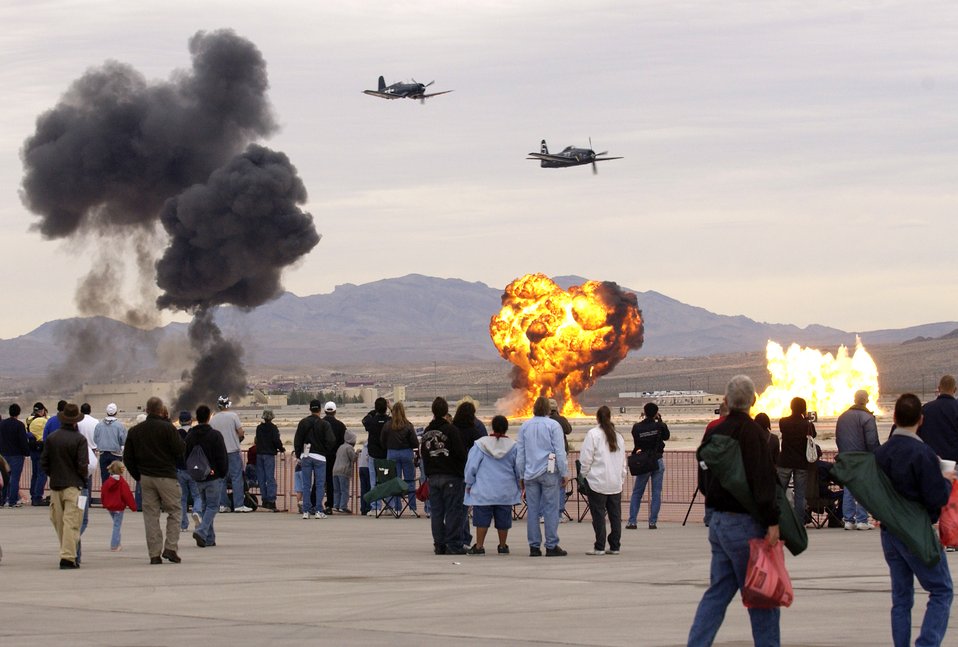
Aviation Nation at Nellis

Air show spectators get a close look at a Korean War aerial re-enactment during Aviation Nation 2006 Nov. 11 at Nellis Air Force Base, Nev. The show was held Nov. 11 and 12.